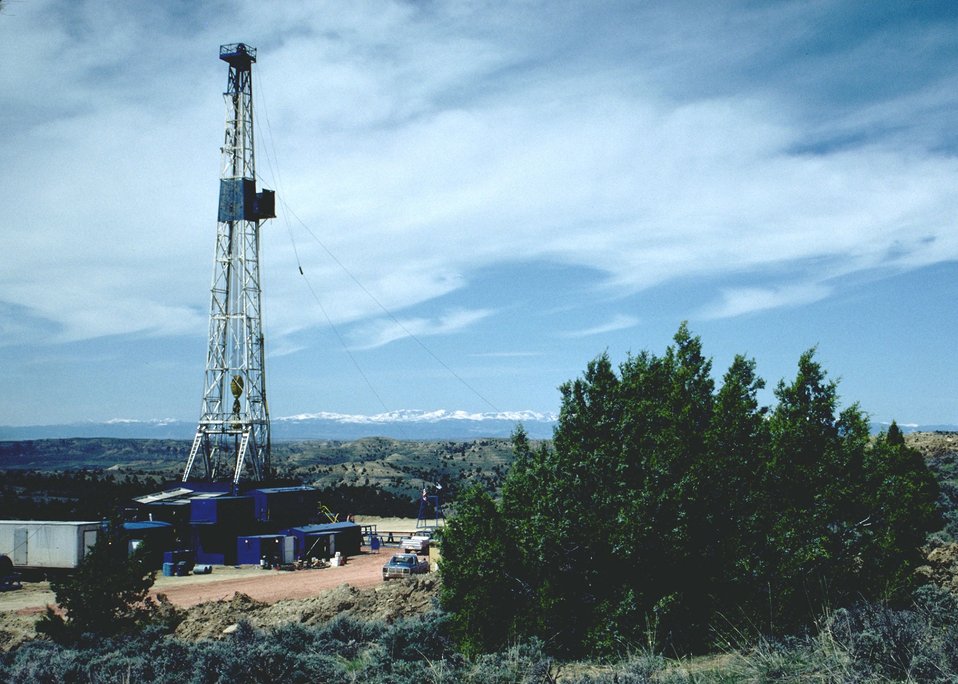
Deep well rig.